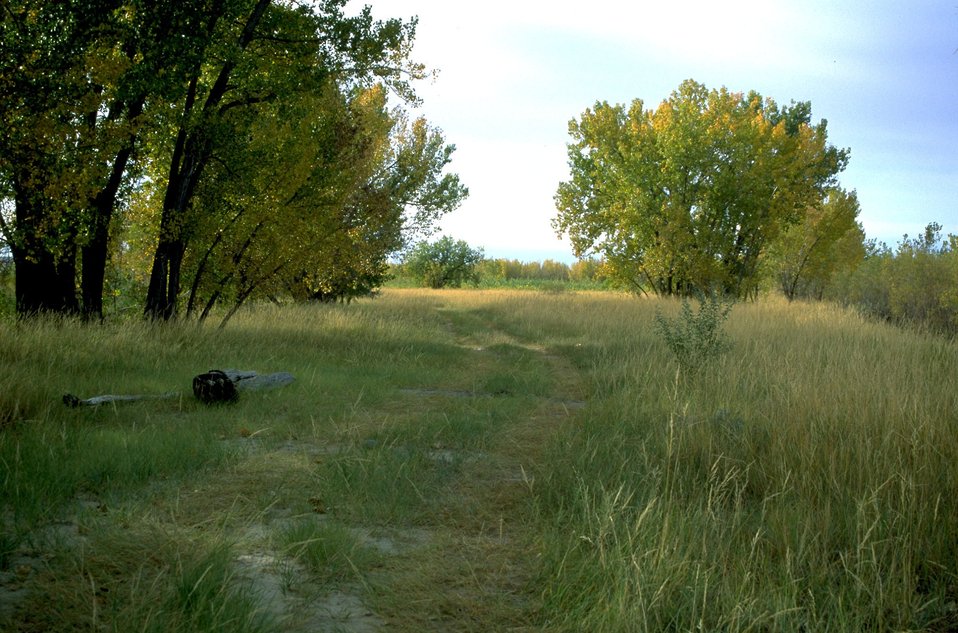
Cottonwood trees and grass along the Yellowstone River